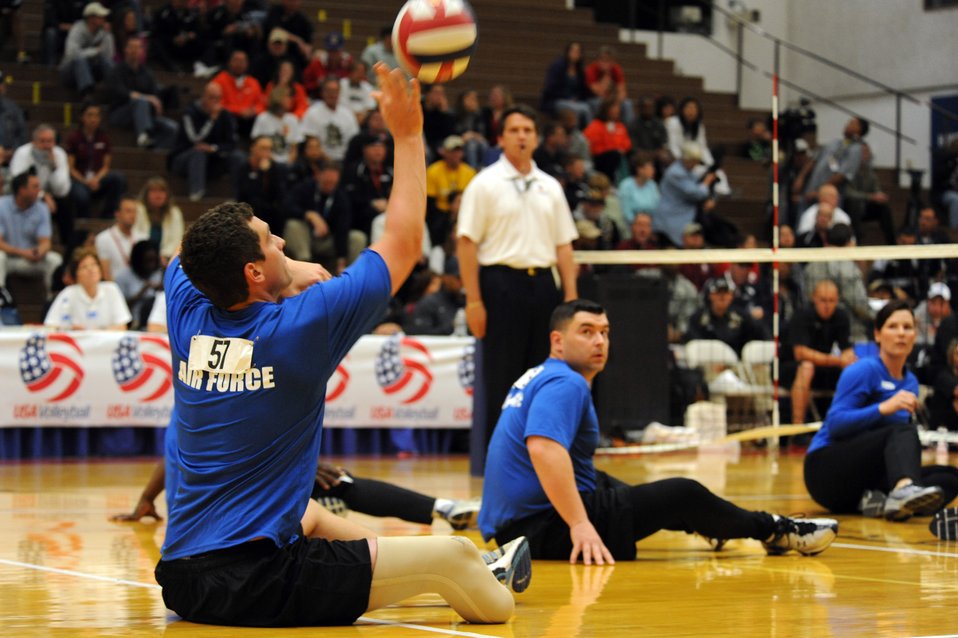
AF Volleyball wins Bronze at Warrior Games

Air Force Warrior Games athlete, 2nd Lt. Ryan McGuire, serves the ball during the Warrior Games sitting volleyball match against Army at the U.S. Olympic Training Center in Colorado Springs, Colo., May 13, 2010.